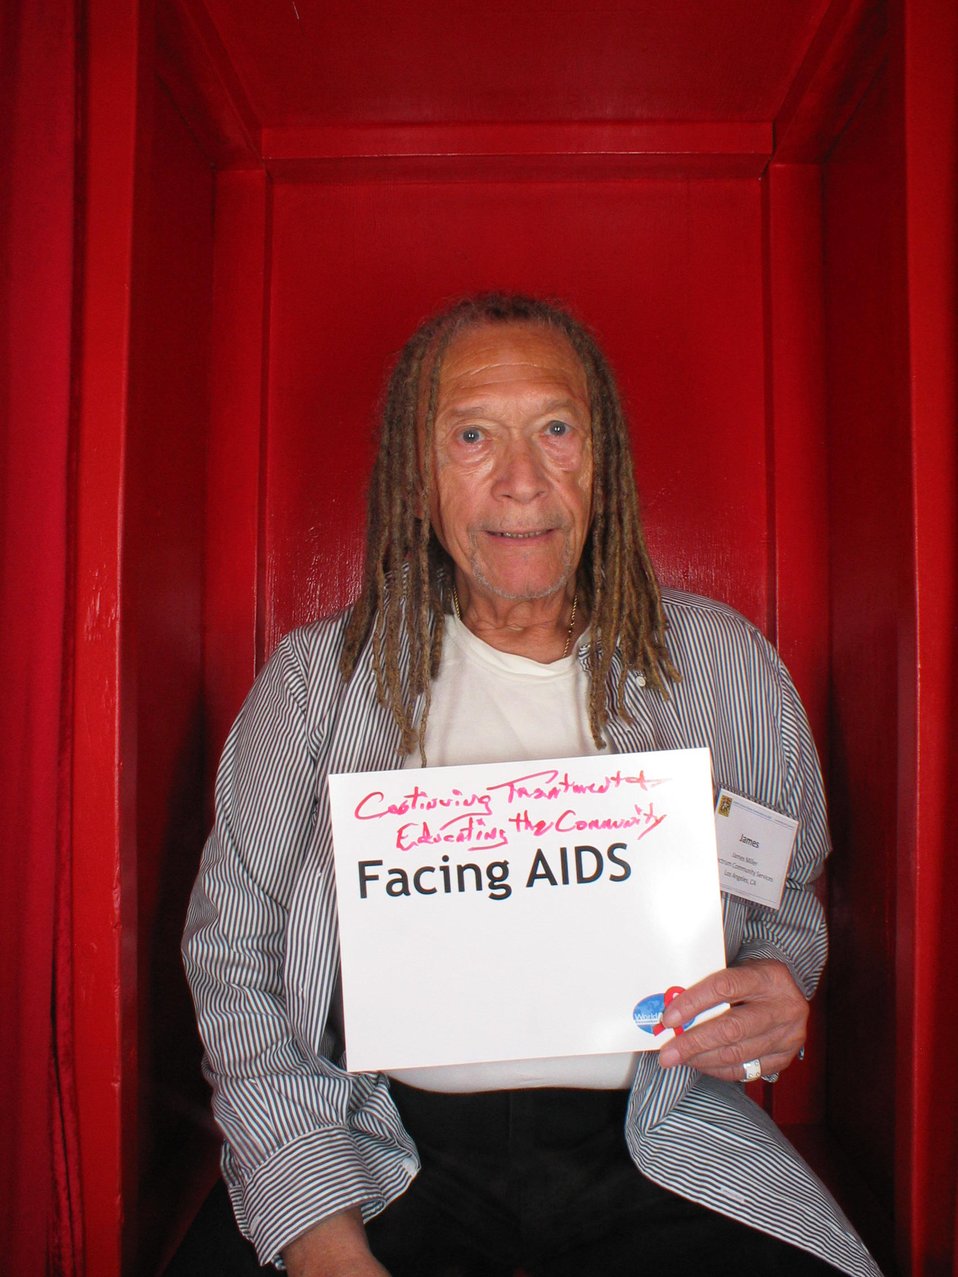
Facing AIDS...educating the community